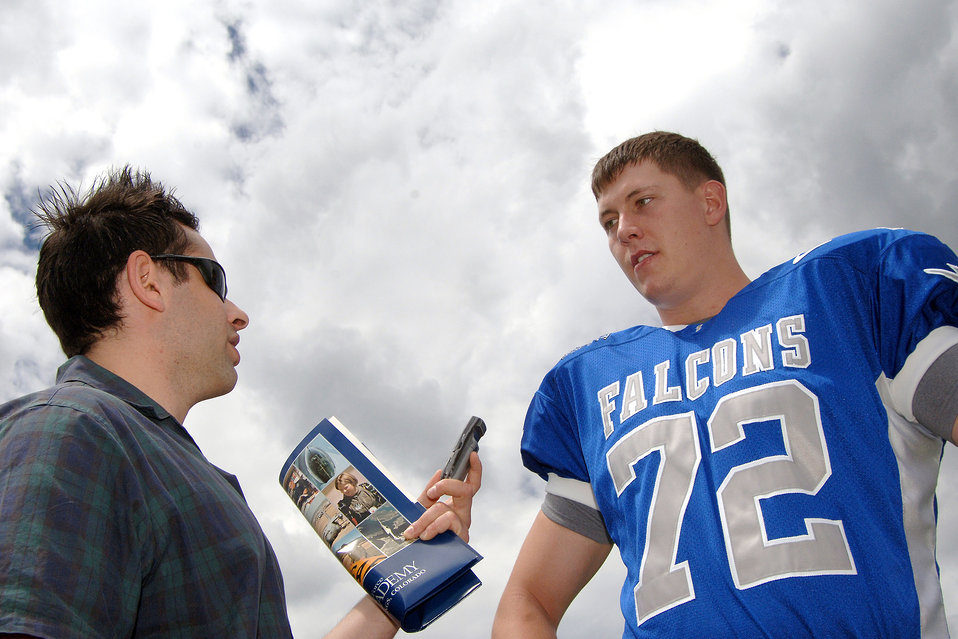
Falcons eye 'Return to Dominance'

Air Force senior offensive tackle Robert Kraay, wearing the Falcons' new home jersey, talks with Colorado Springs Gazette writer Dan Wolken during media day at the U.S. Air Force Academy.